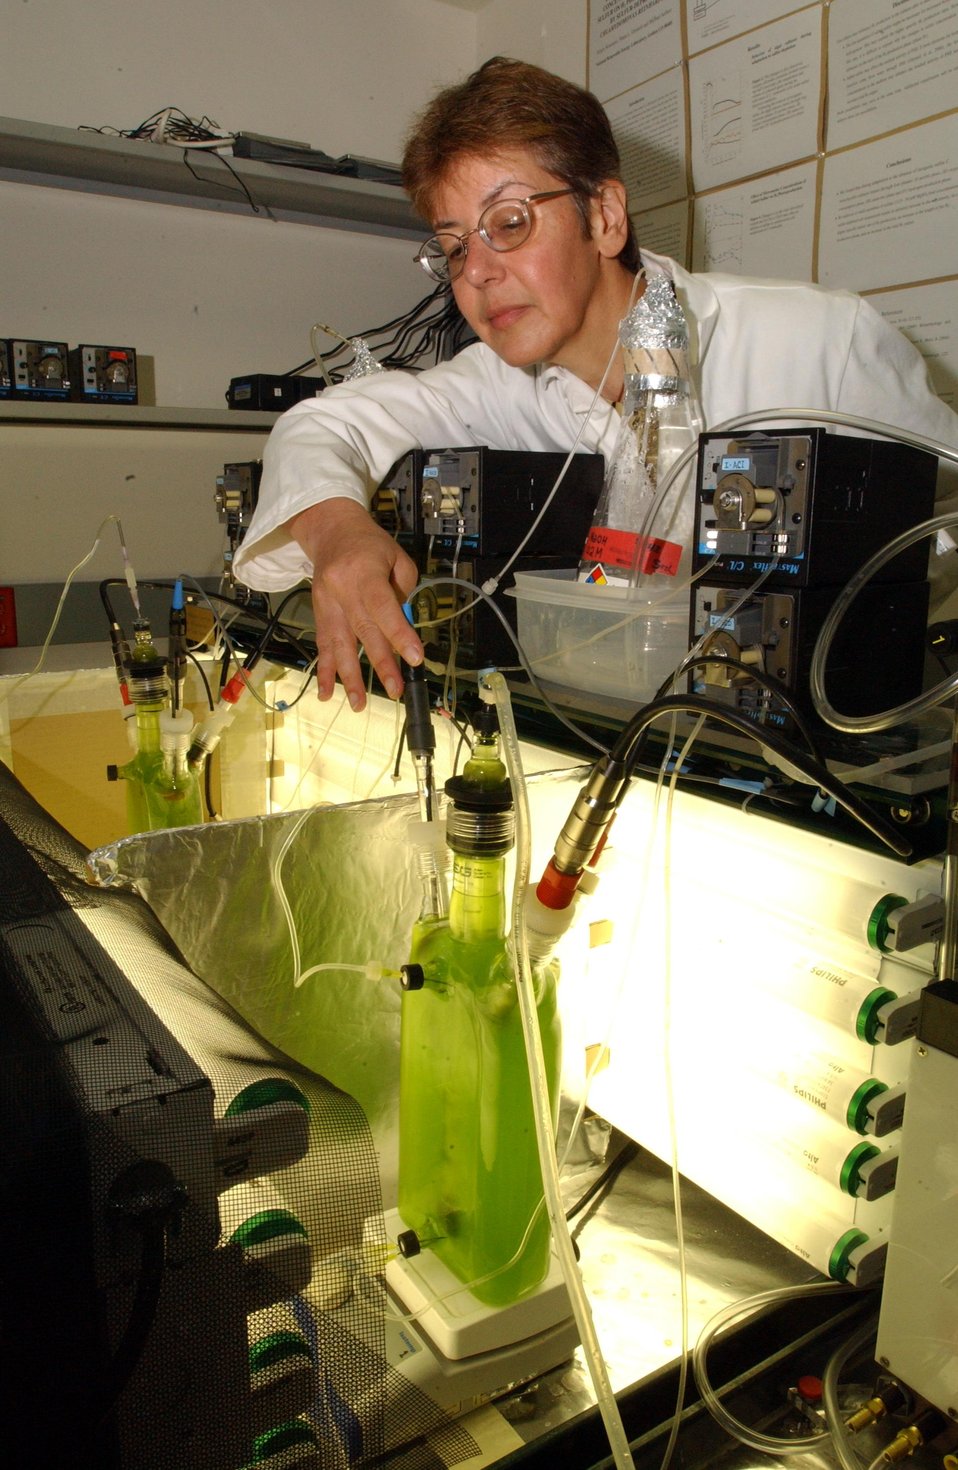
Researcher working in laboratory.

Hydrogen is the simplest and most abundant element in the world and can be produced from a wide variety of domestic resources using a number of different technologies. Researchers in NREL's Basic Sciences and Computational Sciences Center are working together on a novel way to use green algae to produce hydrogen directly from water and sunlight, that, when recombined with oxygen in a fuel cell, produces clean energy with pollutants.